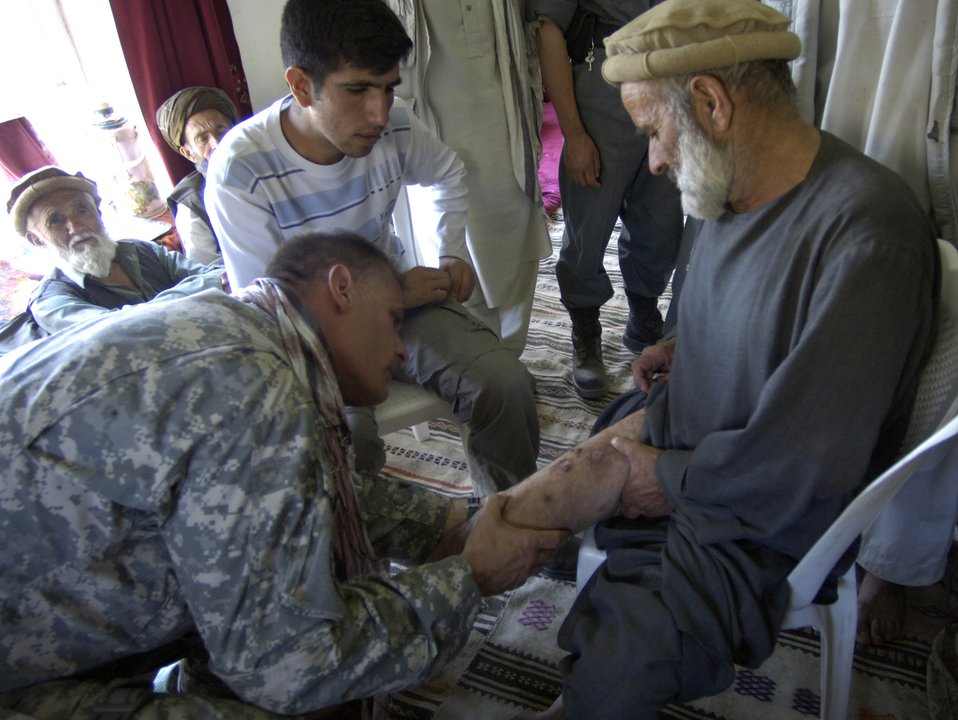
Airmen trek over mountains to deliver aid in Afghanistan

Panjshir Provincial Reconstruction Team member Capt. Kevin Kubly looks at sores on a villager's leg Aug. 7 in Roydara village in the Shutol district of Panjshir province, Afghanistan. Captain Kubly is a physician's assistant deployed from the 3rd Medical Group at Elmendorf Air Force Base, Alaska. He and his fellow PRT members made an 11-mile round-trip trek over a mountain pass and into a river valley to provide medical care to Afghans living in Roydara.